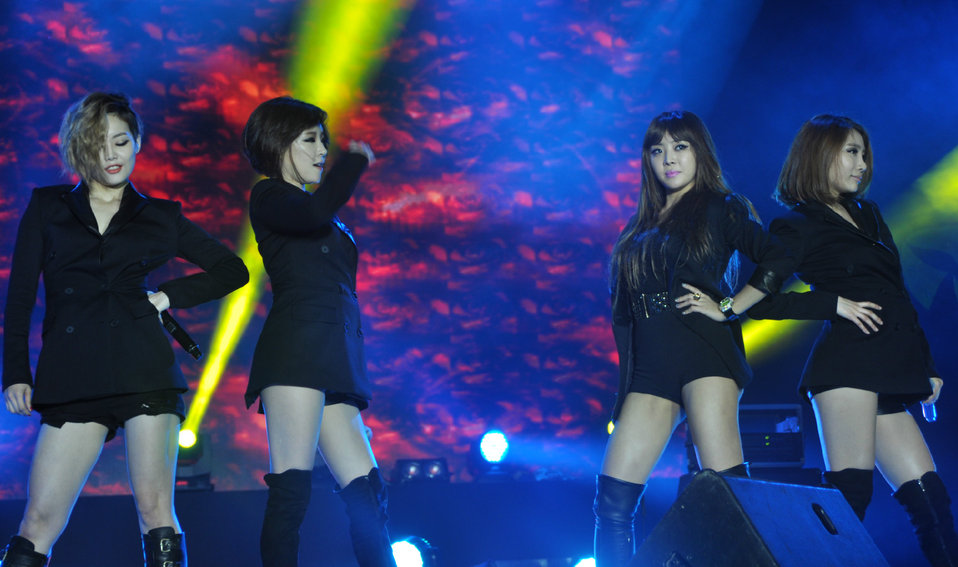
Korean Pop Group Brown Eyed Girls perform at MTV EXIT concert in Hanoi